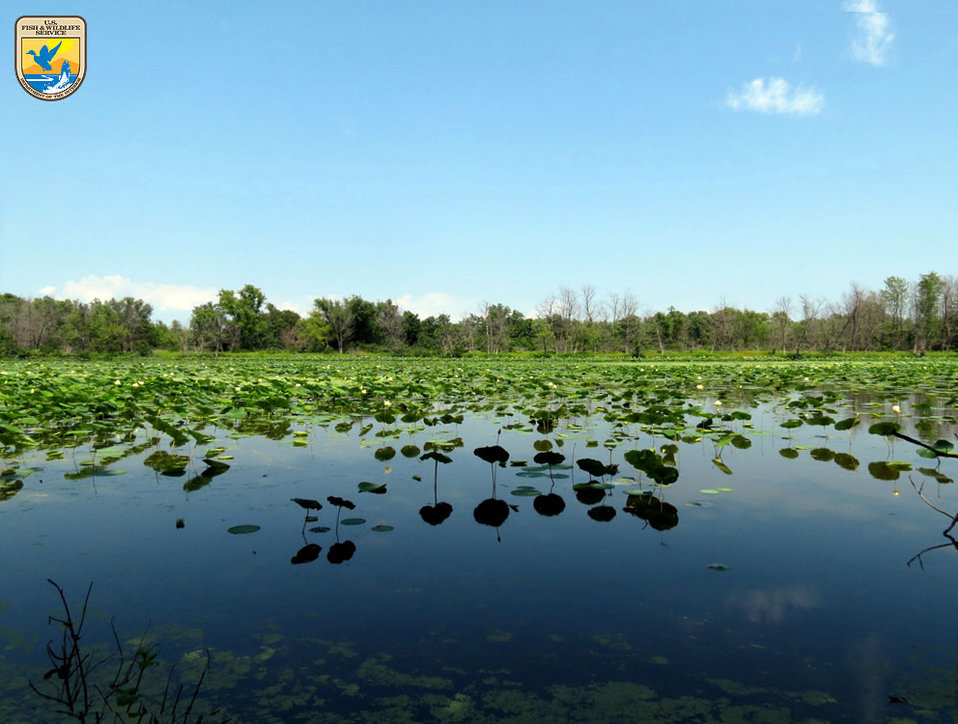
Blackwater wetland - Northeast Region

Blackwater National Wildlife Refuge